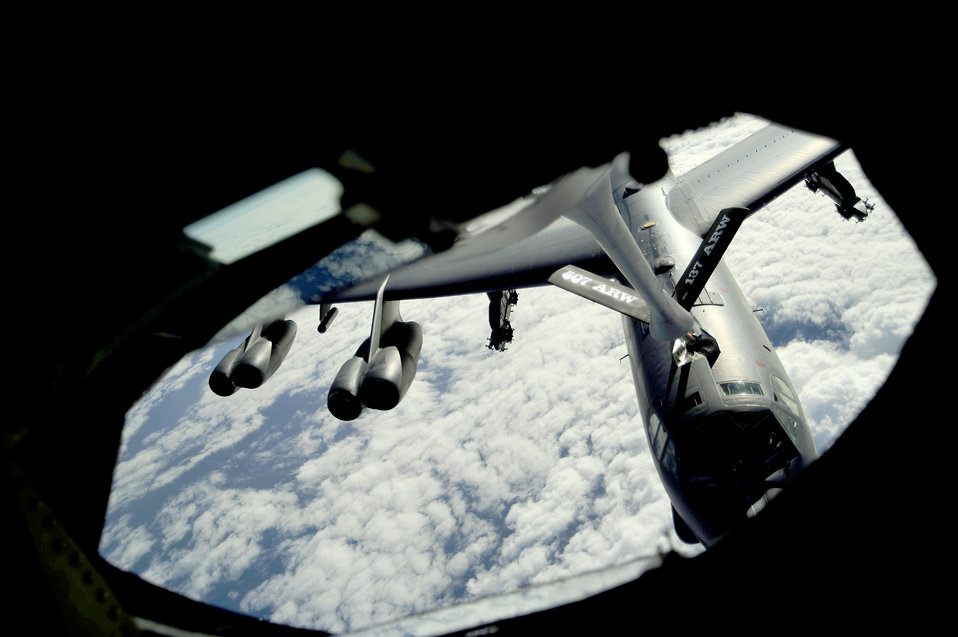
Rim of the Pacific exercise

A B-52 Stratofortress receives fuel from a KC-135 Stratotanker in support of exercise Rim of the Pacific July 10, 2010, over the Pacific Ocean. The international exercise includes more than 14 nations, 32 ships, five submarines, more than 170 aircraft and more than 20,000 Soldiers, Sailors, Marines and Airmen.